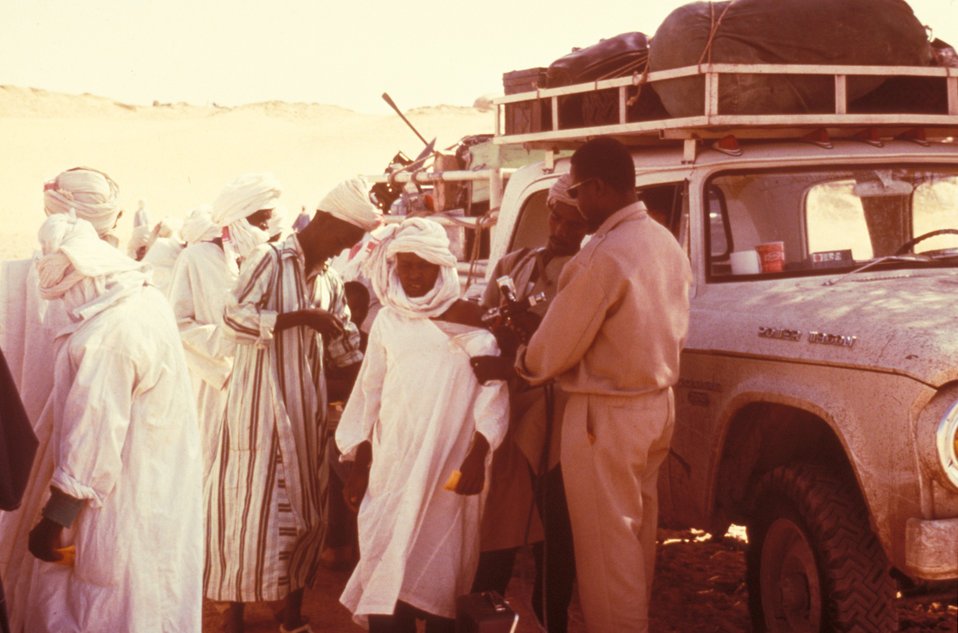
These are healthcare practitioners during the smallpox immunization program in Bangladesh, 1975.